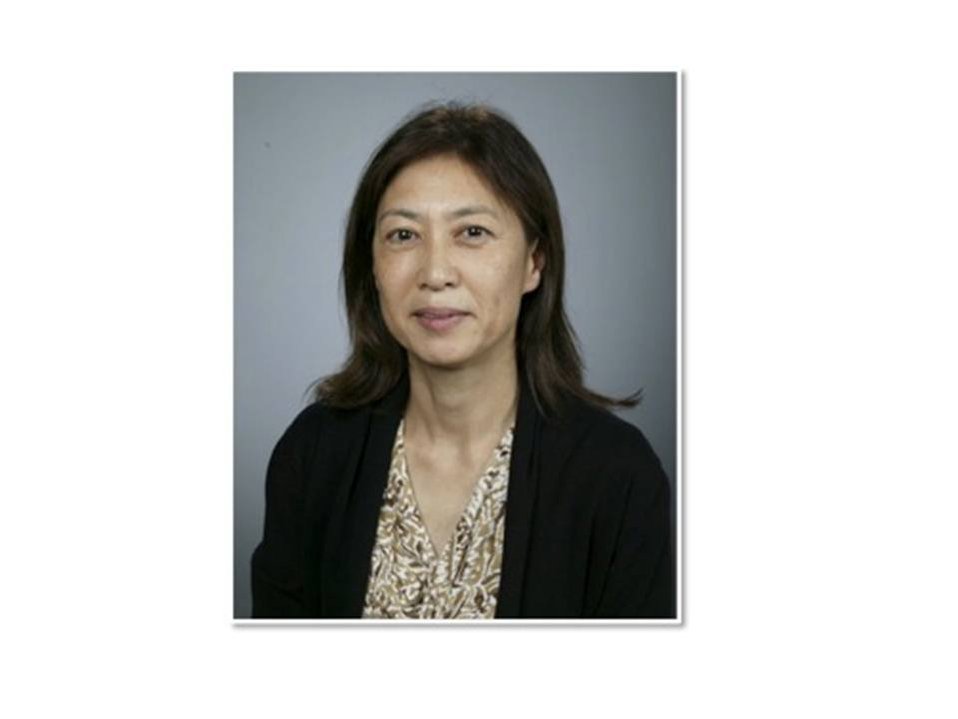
Hye-Sook Park

Dr. Hye-Sook Park has developed experimental techniques in plasma physics, materials science, nuclear physics, and astrophysics that have significantly enriched fundamental science, applied science, and national security science. Hye-Sook is an exemplar of experimental versatility, with a remarkable ability to step across science and technology boundaries to develop new experimental techniques and achieve new results with keen interdisciplinary insights. Hye-Sook began her study of physics at Pfeiffer College in North Carolina. After she obtained her BS in physics in 1981, she became a graduate student at the University of Michigan. She focused on experimental high-energy particle physics, obtaining her PhD in 1985. At that time she accepted a post doc position at the University of California, Berkeley, and then one at the Lawrence Livermore National Laboratory (LLNL) in 1987. She has been a staff scientist at LLNL since 1989.

Read her full story at energy.gov/diversity/articles/women-energy-hye-sook-park